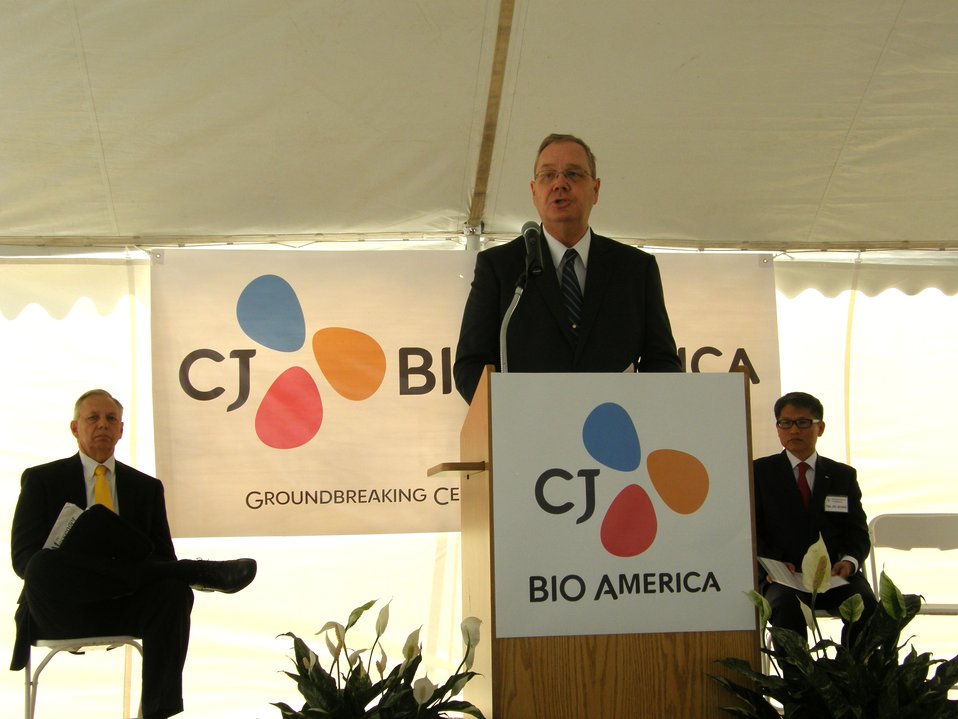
Agriculture Under Secretary for Rural Development Dallas Tonsager spoke at the groundbreaking ceremonies the CJ Bio America's $320 million lysine production facility, on Monday, May 14, 2012 in Ft. Dodge, Iowa. When operational in 2014 the plant will create more than 170 jobs and produce more than 100,000 metric tons of amino acids for animal feed additives.